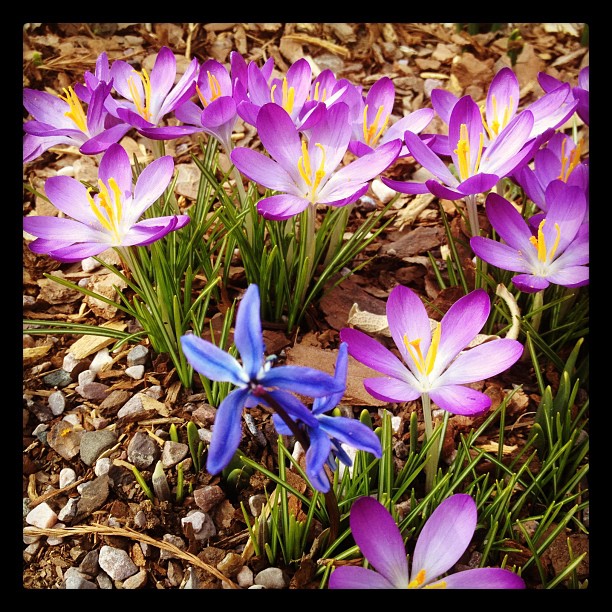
Spring at the Capitol grounds.